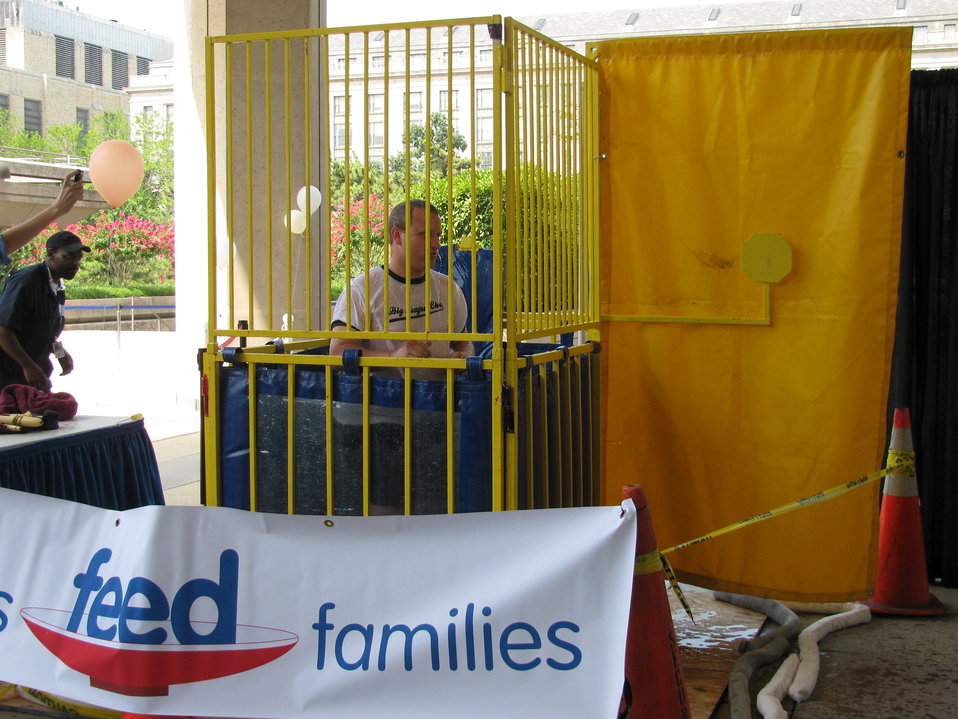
Clu lab pics 015